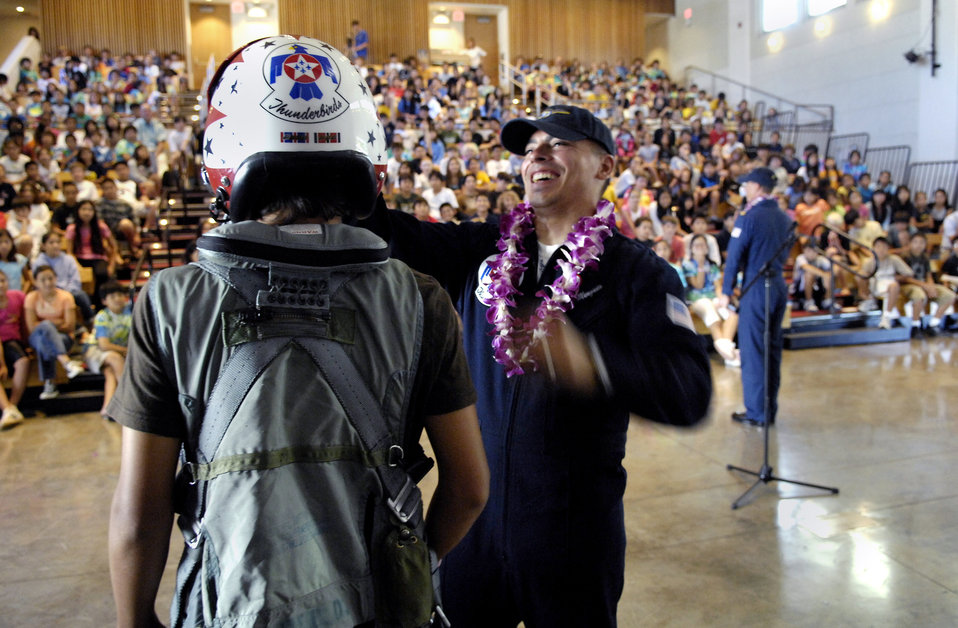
Thunderbirds visit school children during Air Force Week Honolulu

Tech. Sgt. Mario Munguia helps a student put on life support gear as Maj. Tad Clark talks about the equipment pilots use as members of the Air Force Deomonstation Team, the Thunderbirds, to middle school children Sept. 14 at the Punahou School in Honolulu. The Thunderbirds made a community appearance at the school in Oahu as part of Air Force Week Honolulu.